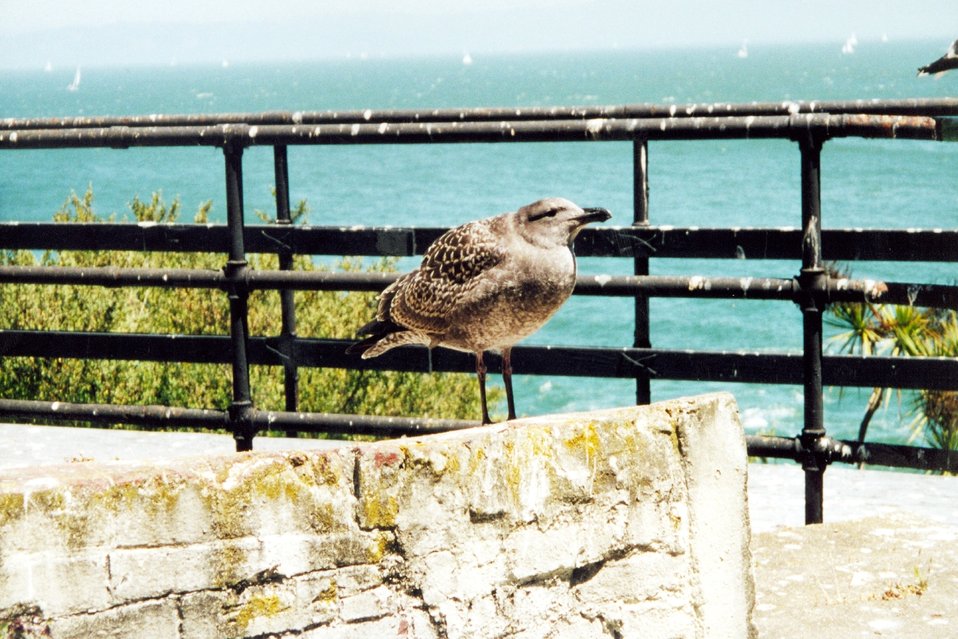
A jailbird at Alcatraz Island.